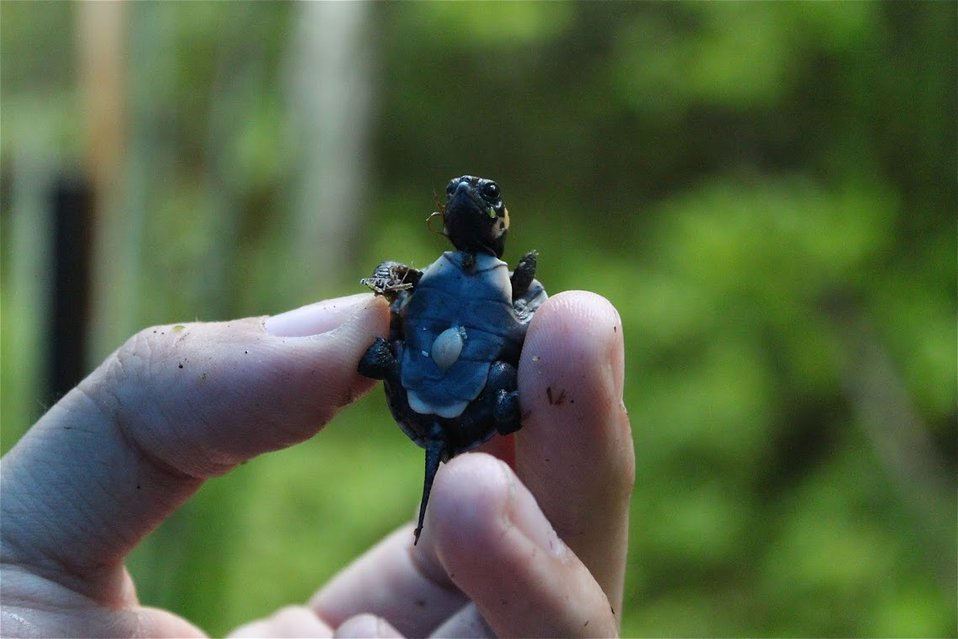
Bog turtle

Scientific name: Clemmys muhlenbergii
Status: Threatened and similarity of appearance

Photo of the Week - Newly hatched bog turtle.